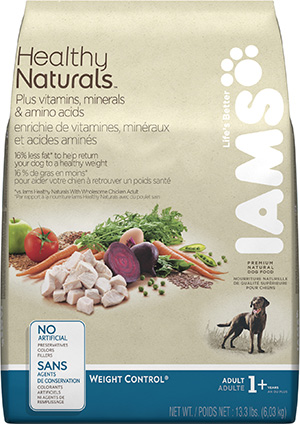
RECALLED – Dog and Cat foods - Dry

August 14, 2013 – Product Recall – P&G Voluntarily Recalls Limited Quantity of Dry Pet Food Due to Possible Health Risk.